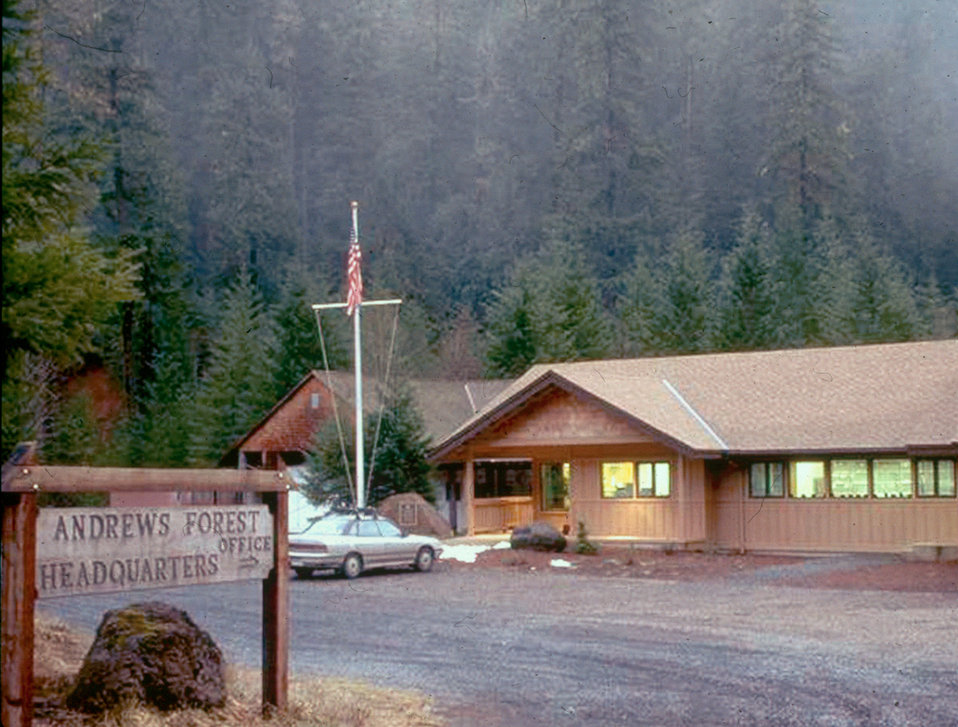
This is an image of the U.S. Department of Agriculture (USDA) U.S. Forest Service Pacific Northwest Research Station in Andrews National Forest near Portland, OR.